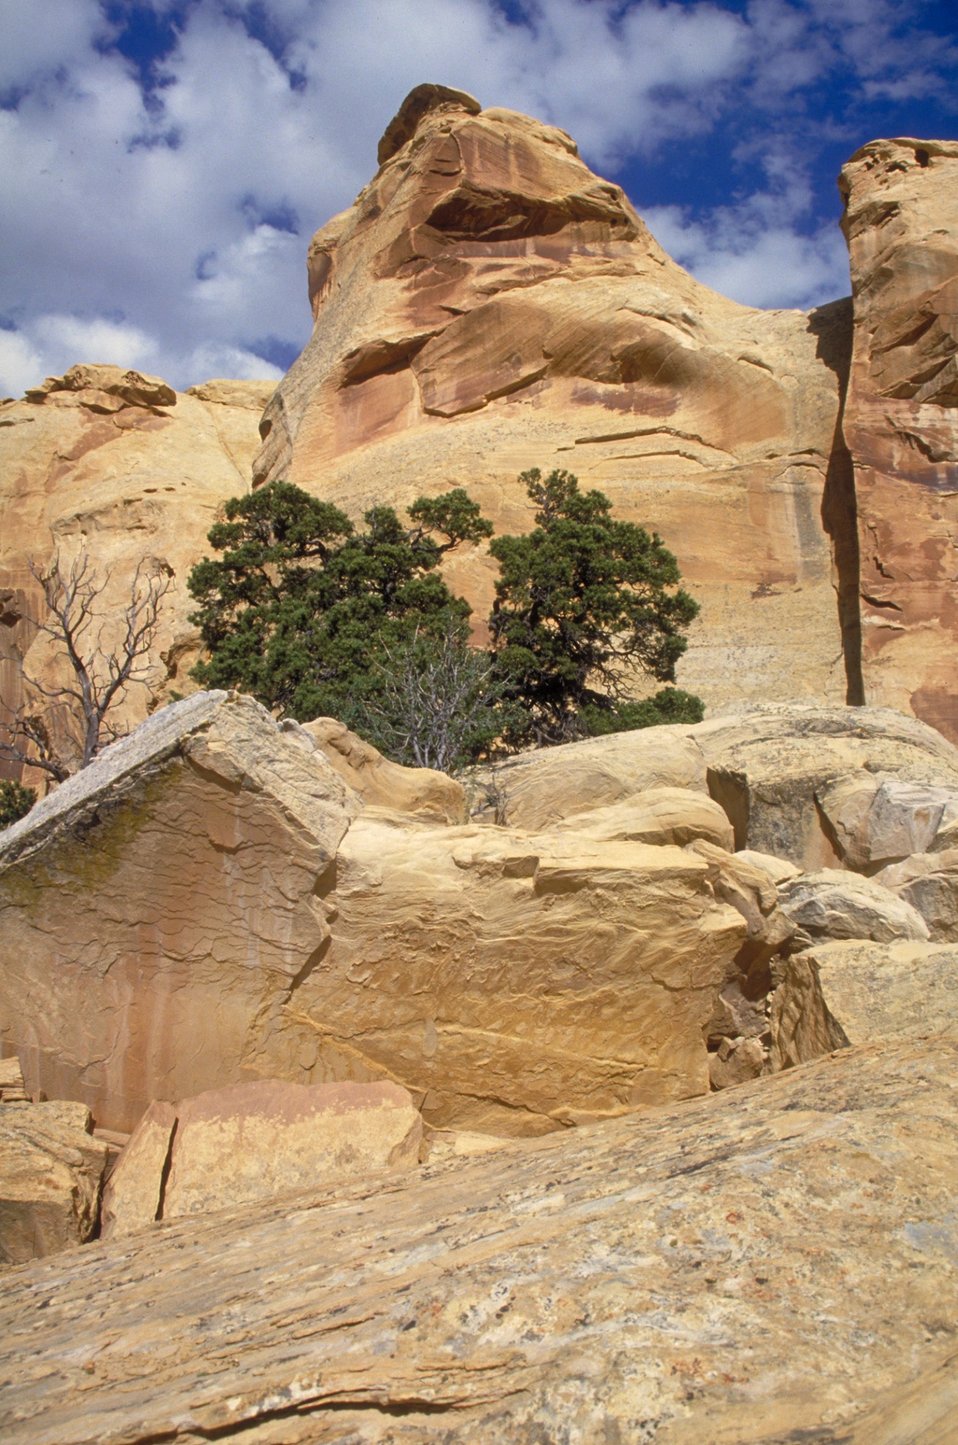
Head of Sinbad, San Rafael Swell